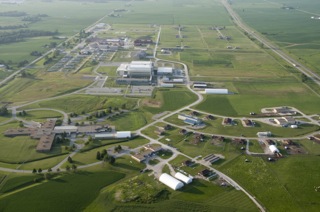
This is an image of the U.S. Department of Agriculture (USDA) research facility in Ames, IA.